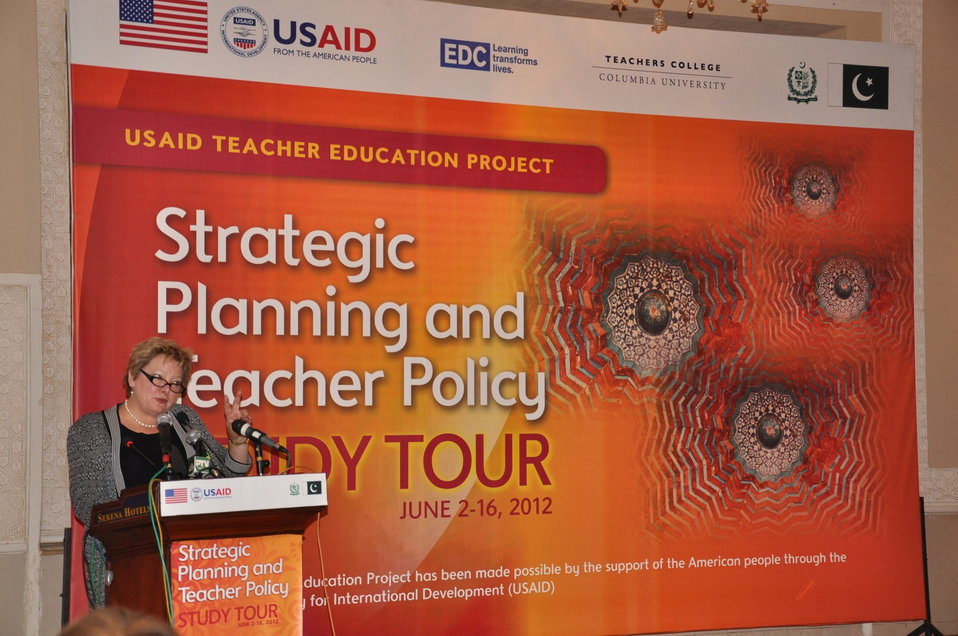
Study Tour: Strategic Planning and Teacher Policy

Islamabad, May 31, 2012 -- USAID Deputy Mission Director, Karen Freeman talking at USAID-funded study tour Send-off reception. The tour is designed to enhance these Pakistani education professionals’ capacity for strategic planning and policy development.